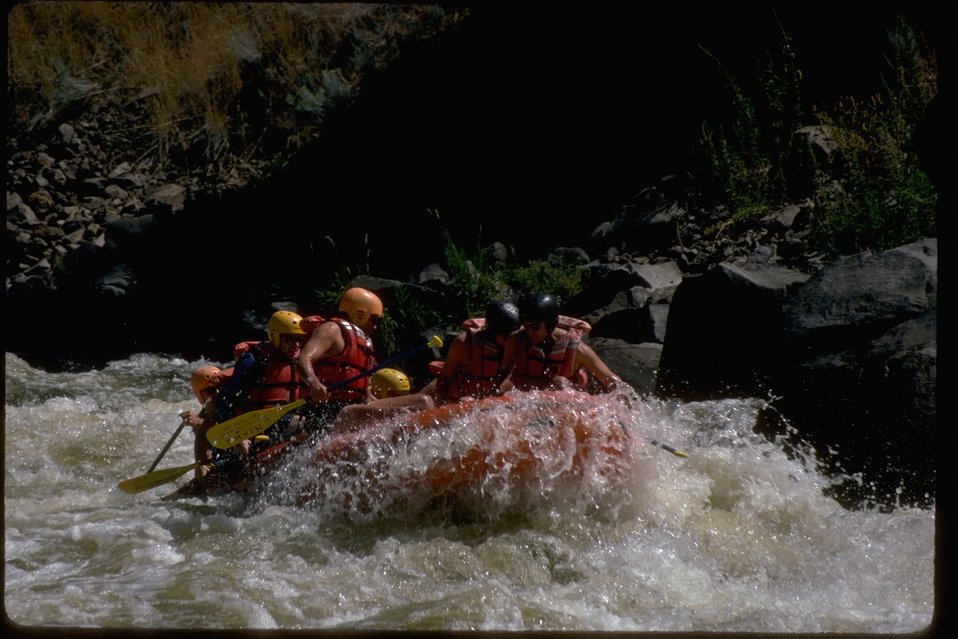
Rafting on the Klamath River.